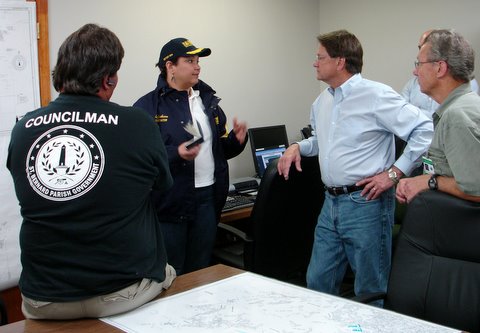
Administrator Lisa Jackson Discussing EPA Response

May 2, 2010 - EPA Administrator Lisa P. Jackson meets with officials in Louisiana to address the government response to the oil spill.